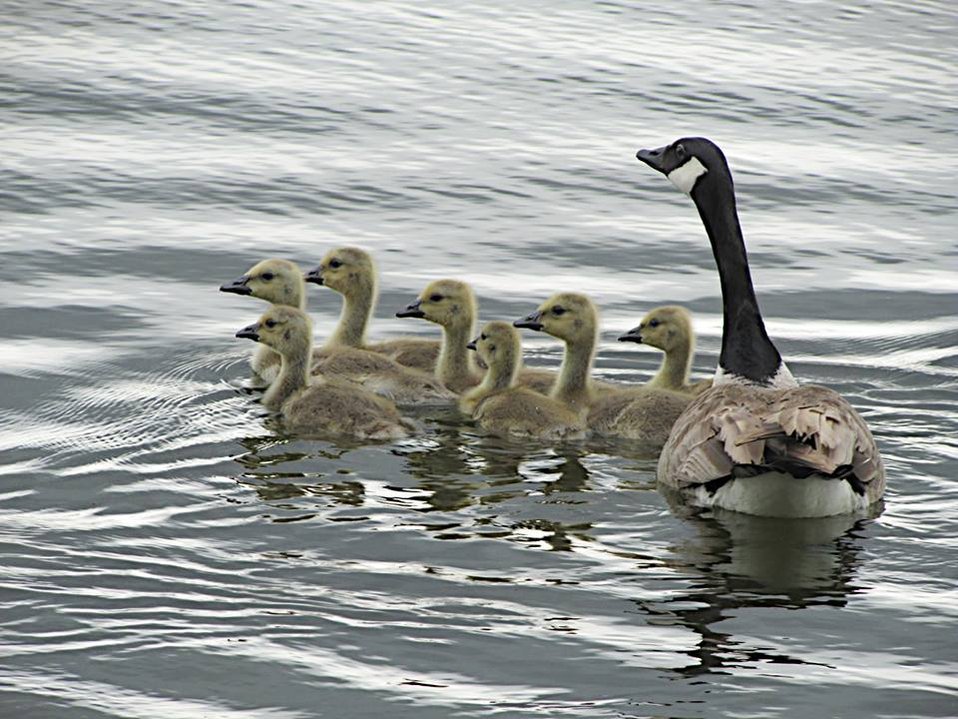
Lifetime Love

Some geese use our ponds as a pit stop during migration, others stick around for months and raise their young here. At two years old, geese find a mate that they keep for life. This is a monogamous relationship that can last for over 20 years!

This picture is from last spring, but the family stuck around all summer.